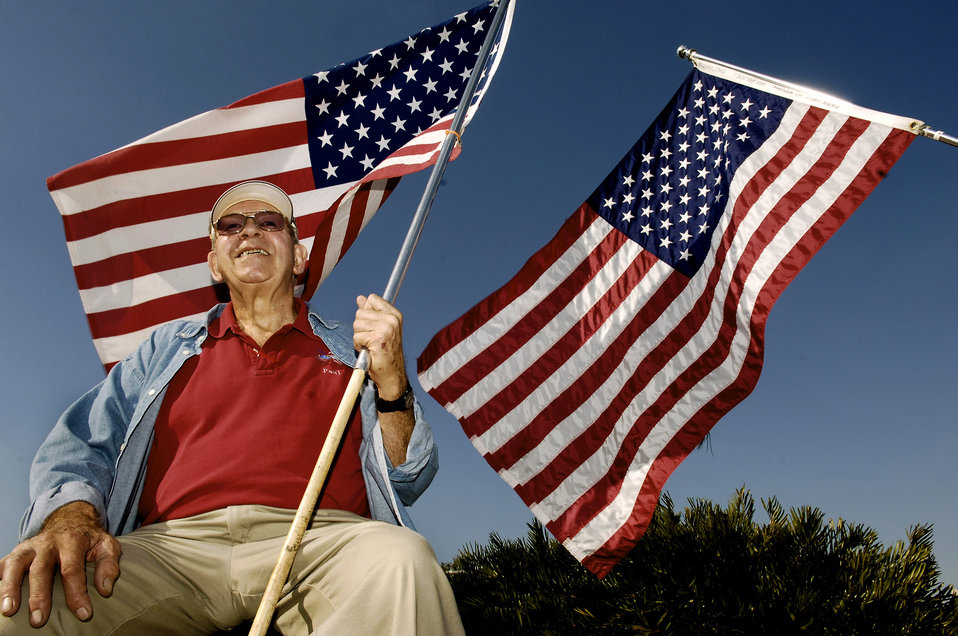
Long may it wave

Paul Diehl shows his support to military members and their families March 21 near MacDill Air Force Base, Fla. Mr. Diehl is part of the Bayshore Patriots, a group of retired military and civilian members who wave the American flag on one of the busy roads in Tampa.